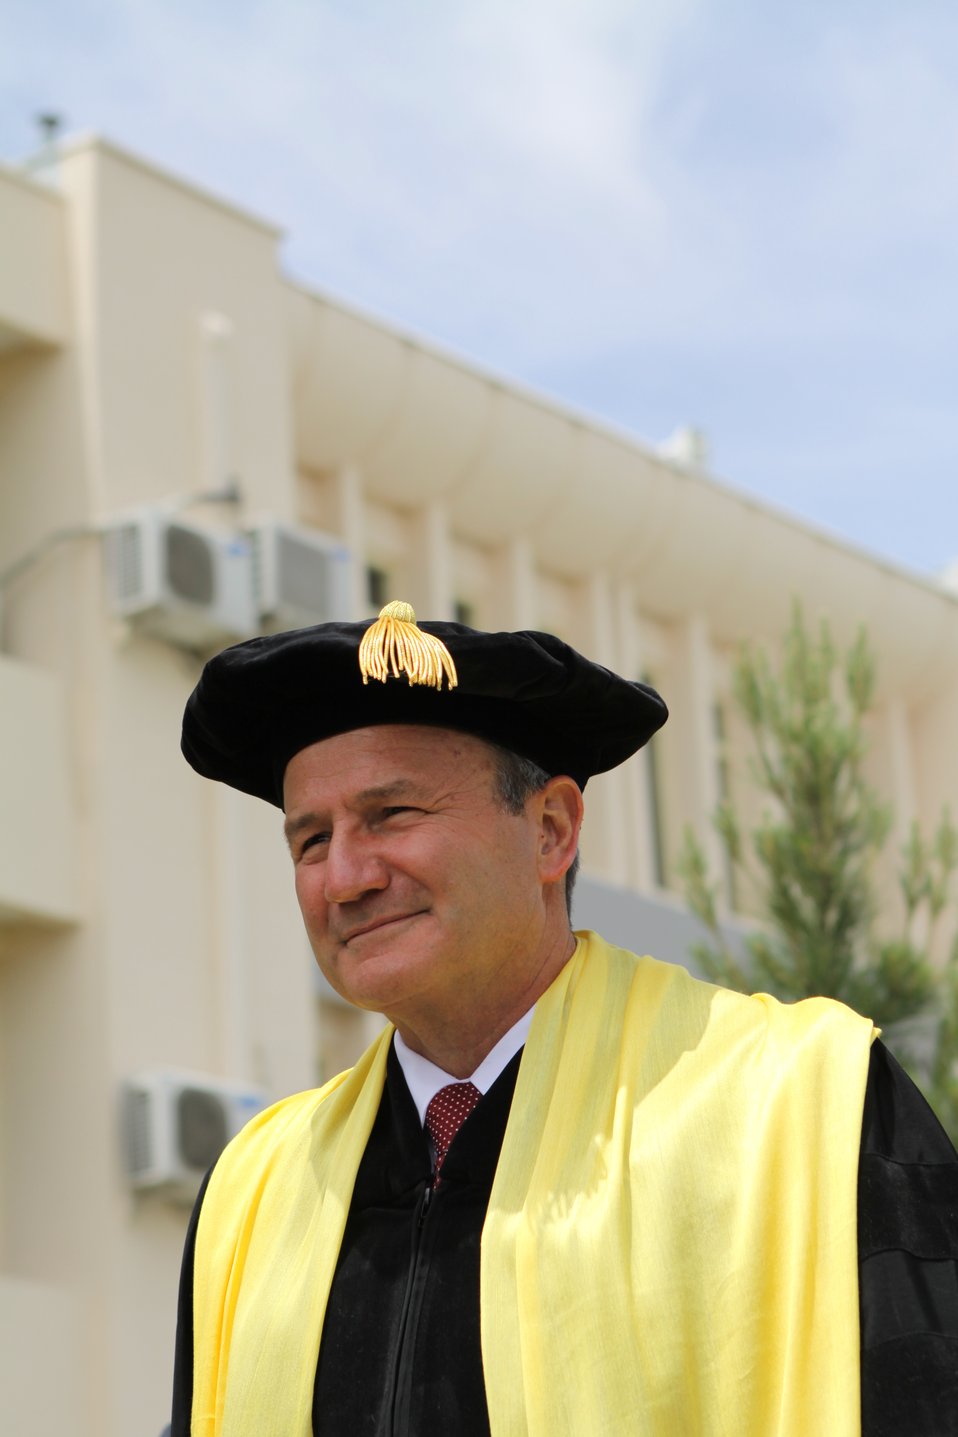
100526 AUAF Graduation 095